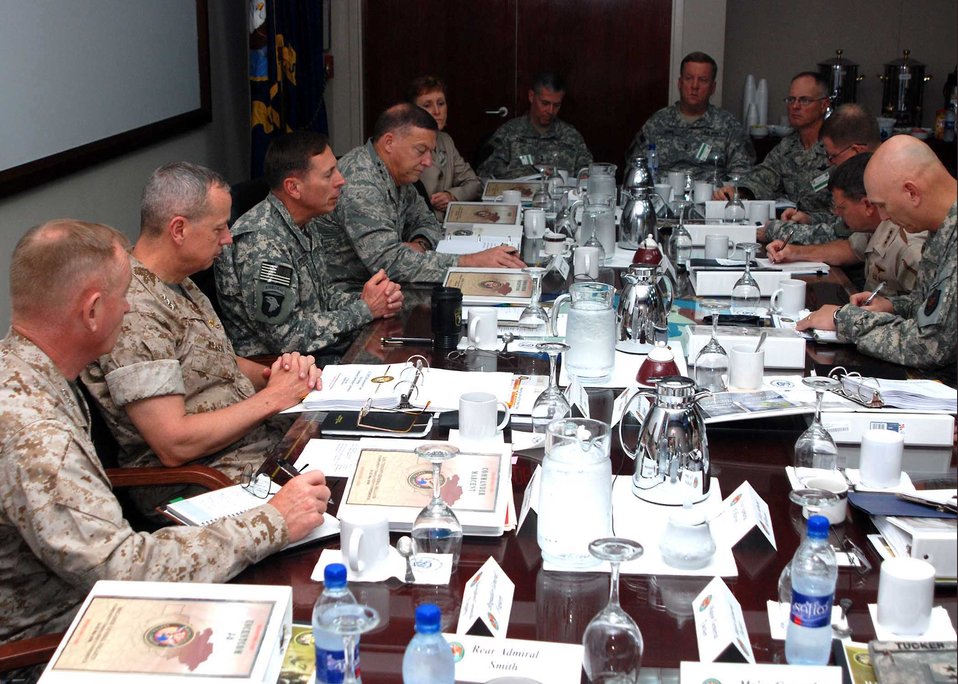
CENTCOM commanders gather

Army Gen. David H. Petraeus (third from left), commander of U.S. Central Command, talks with regional U.S. commanders at a conference in Bahrain May 21.